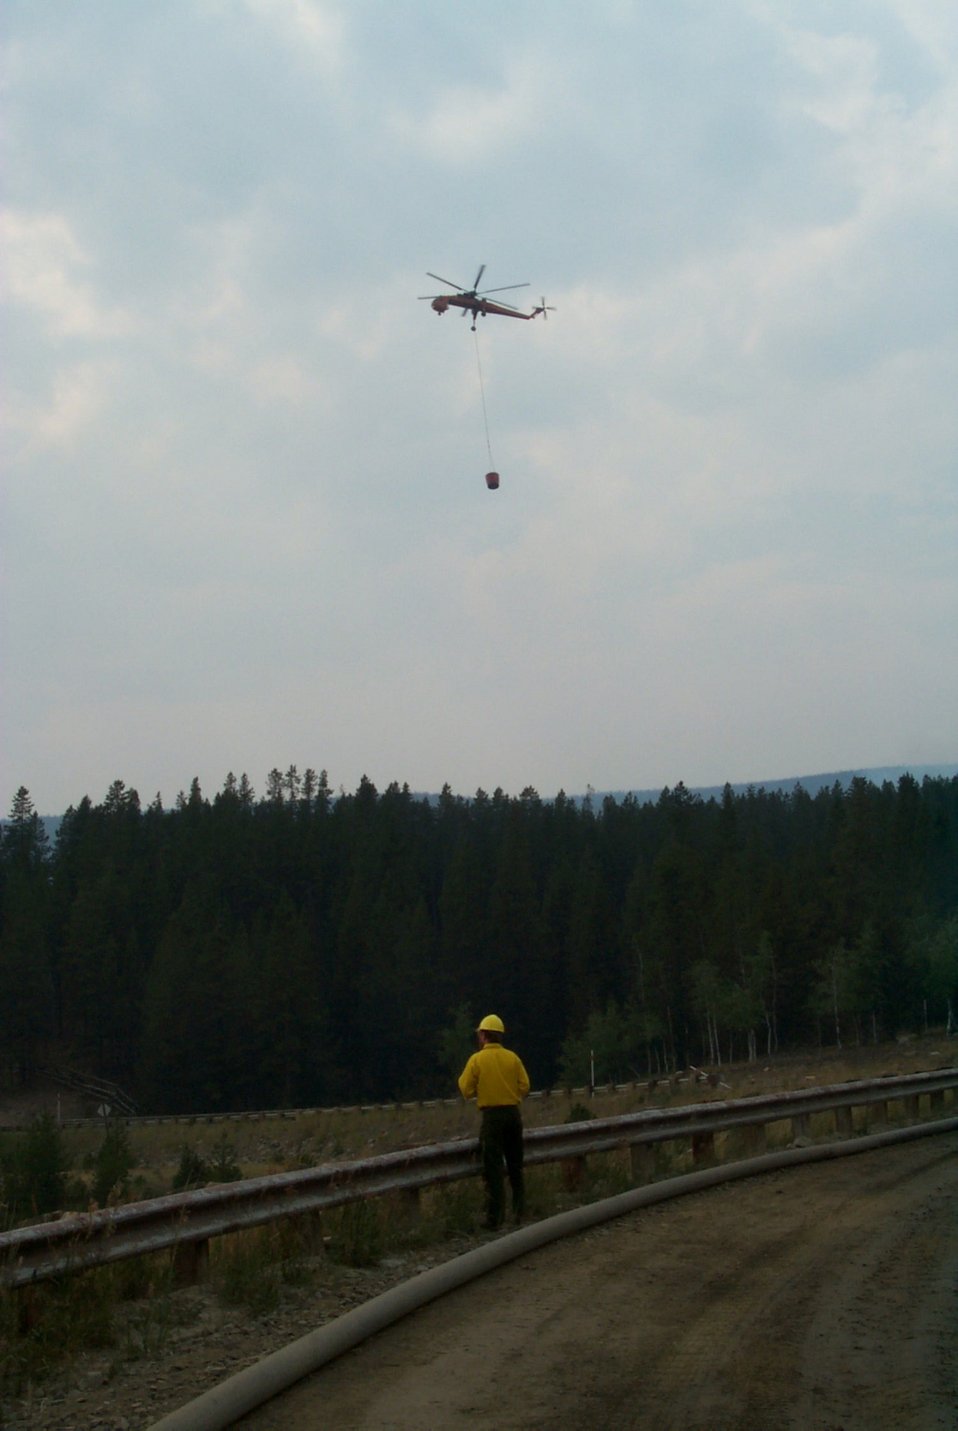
Helicopter Drop Fire Clearwater Fire Salmon Field Office USRD Upper Snake River District